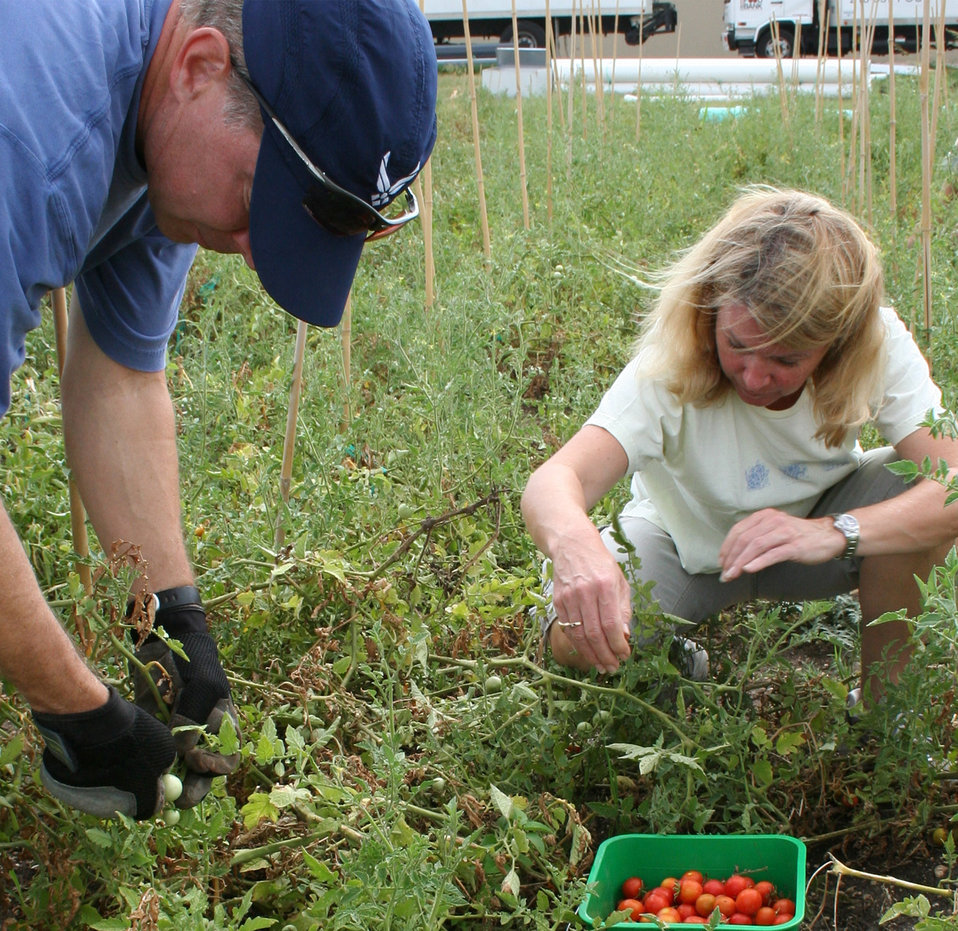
AFPC at SA food bank

Air Force Personnel Center assignments director Col. David Slade and his wife Suzy help harvest tomatoes July 1, 2011, at the San Antonio Food Bank.